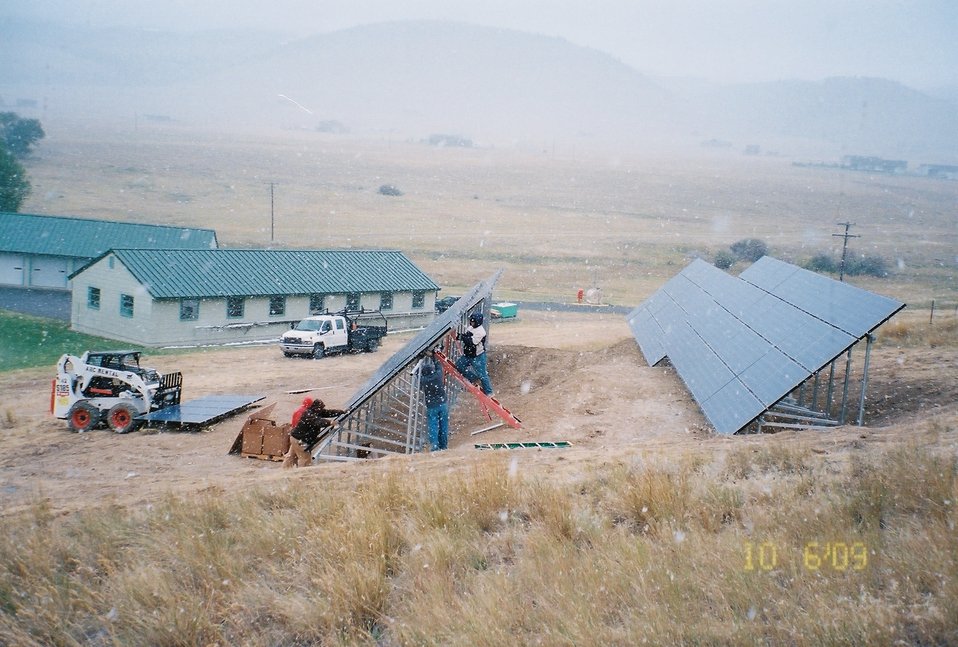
Installing solar panels at Ennis National Fish Hatchery

Ennis National Fish Hatchery (NFH) in Montana powered up with renewable energy-producing systems in fall 2010. Ennis NFH chose to install solar panels on a treeless, south-facing hill which has proven to be a great location for its solar array.